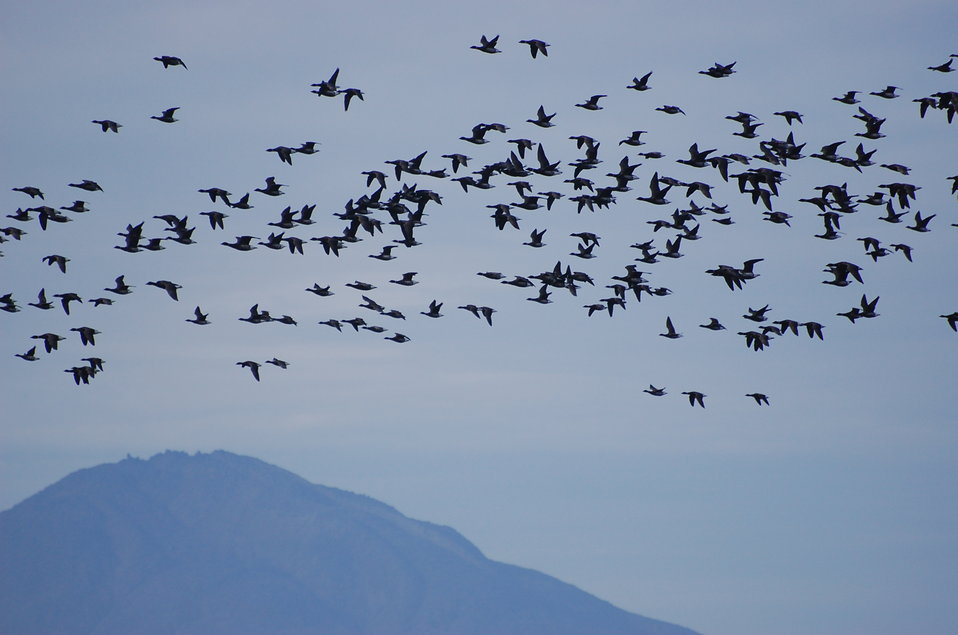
Brant at Izembek Lagoon, Izembek National Wildlife Refuge